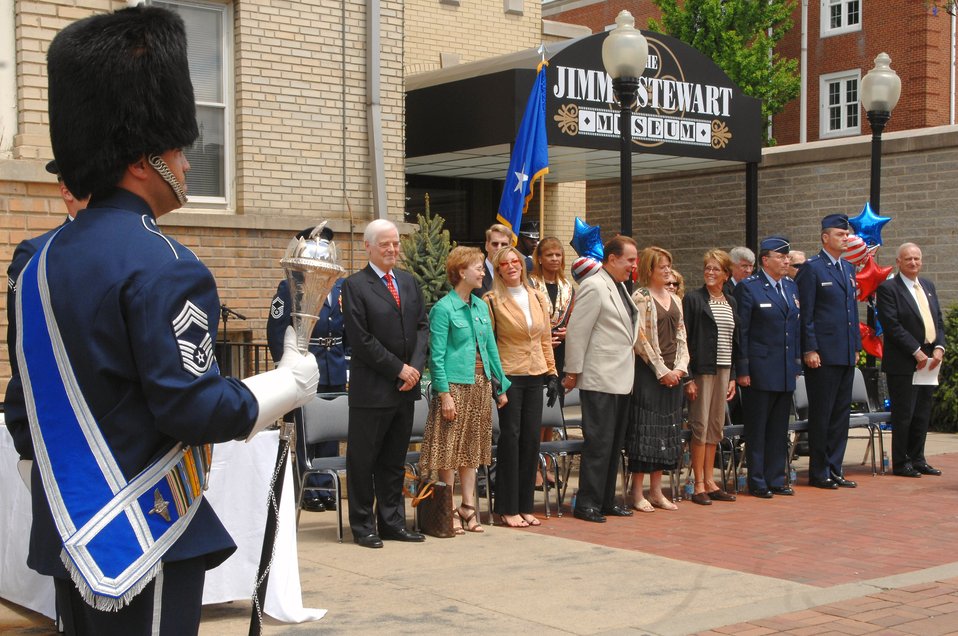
Bolling, Reserve officials honor famous actor, Airman

The Jimmy Stewart Centenniel Celebration took place May 24 in his hometown of Indiana, Pa. Nick and Nina Clooney (from left to right), parents of actor George Clooney; Marie and Rich Little, comedian; Kelly Stewart Harcour and Judy Stewart, daughters of Jimmy Stewart; Maj. Gen. Charles E. Stenner Jr., assistant deputy chief of staff for strategic plans and programs for Headquarters Air Force; Col. Terry Ross, 11th Wing vice commander; and Carson Greene, president of the Jimmy Stewart Museum; observe the U.S. Air Force Band's Ceremonial Brass unit perform.